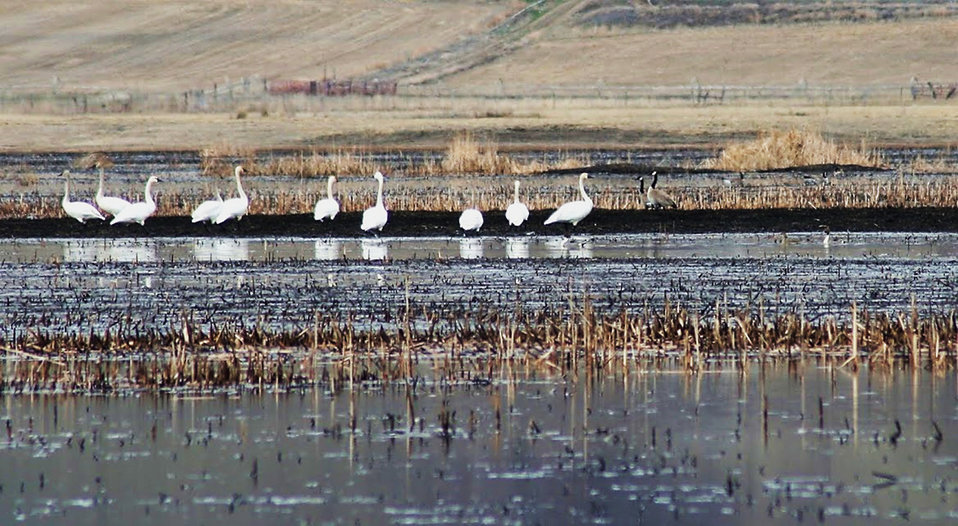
Trumpeter Swans sighted post-fire

While the Southeast Idaho Fire Management Officer (FMO) and Refuge Wildlife Biologist were monitoring this post-burn site at Oxford Slough Waterfowl Production Area (WPA), they sighted trumpeter swans, sandhill cranes, Canadian geese, mallards, and pintail ducks. Oxford Slough WPA is located on the edge of Oxford in southeast Idaho. It was originally purchased to protect redhead duck nesting habitat, and is the only waterfall production area in the Service’s Pacific Region. The area is largely hardstem bulrush marsh, interspersed with open water and surrounded by areas of playa, saltgrass flats, native wet meadow, and some cropland. The Fire Management Officer had conducted a 700-acre prescribed burn at this site last fall to restore marsh habitat, and was happy to see so much wildlife on the monitoring visit post-burn. Prescribed fire is used periodically in the more densely vegetated areas of the marsh. It creates open water ponds in the marsh after re-flooding and recycles nutrients that increase plant growth, resulting in improved habitat and markedly increased use by waterfowl. This is the first time trumpeter swans have been sighted on the WPA.